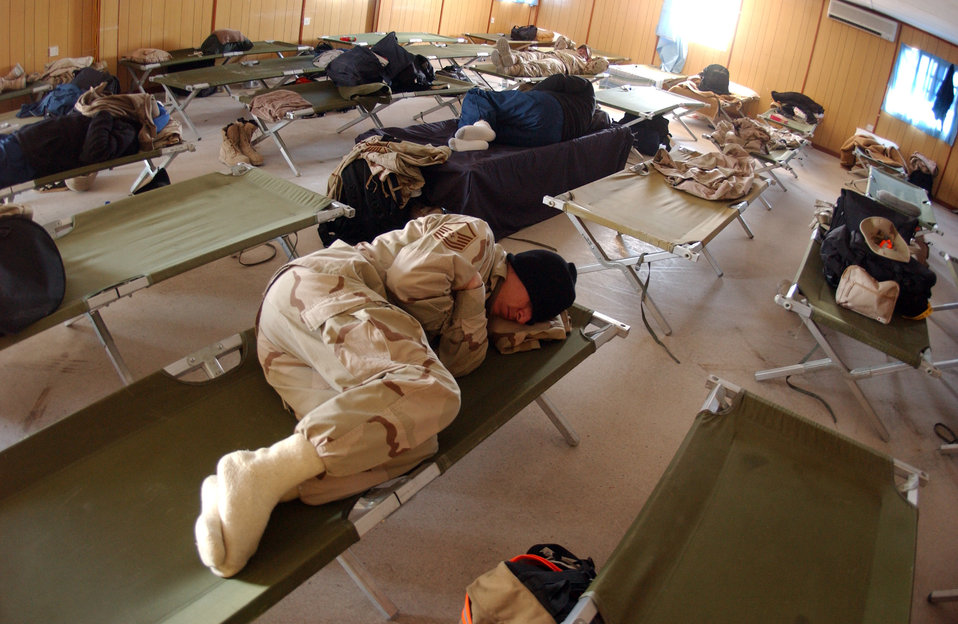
Services Airmen handle record-breaking 'invasion'

060119-F-3488S-005
SOUTHWEST ASIA (AFPN) -- Servicemembers sleep on cots in this desert base's Freedom Dining Facility. They are waiting for flights to move them to their deployed locations. Due to bad weather throughout the region, more than 3,000 transients had to spend the night here.